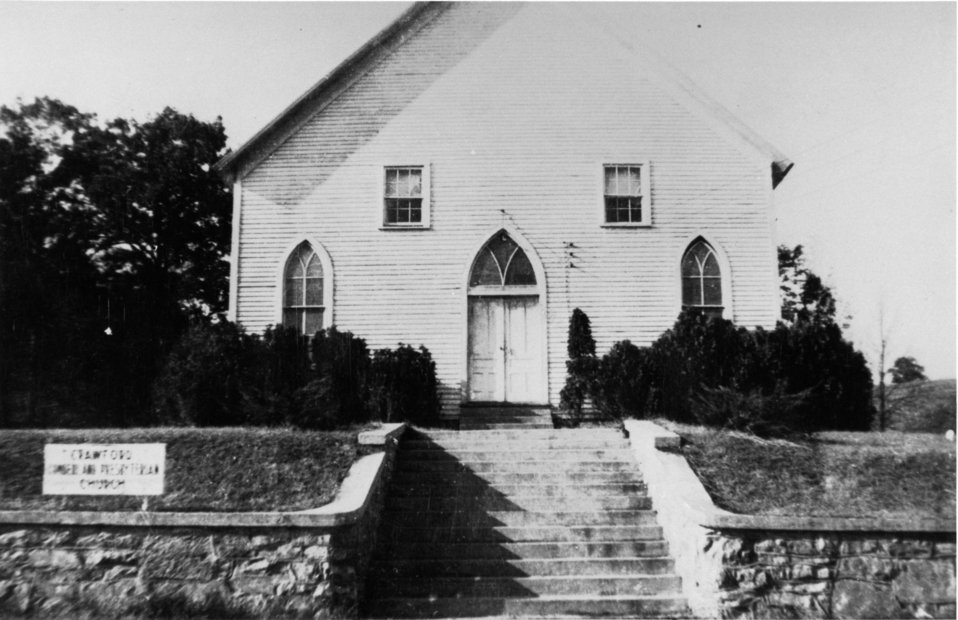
Early settlers at Oak Ridge